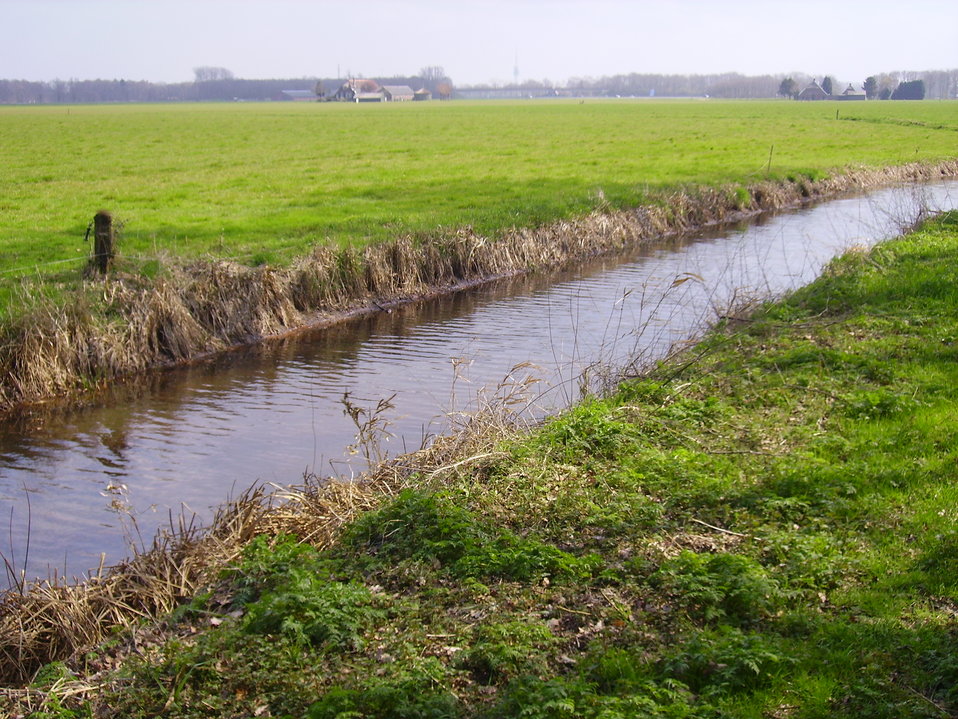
Nederlands: De Oude Schipbeek bij Loo-bathmen